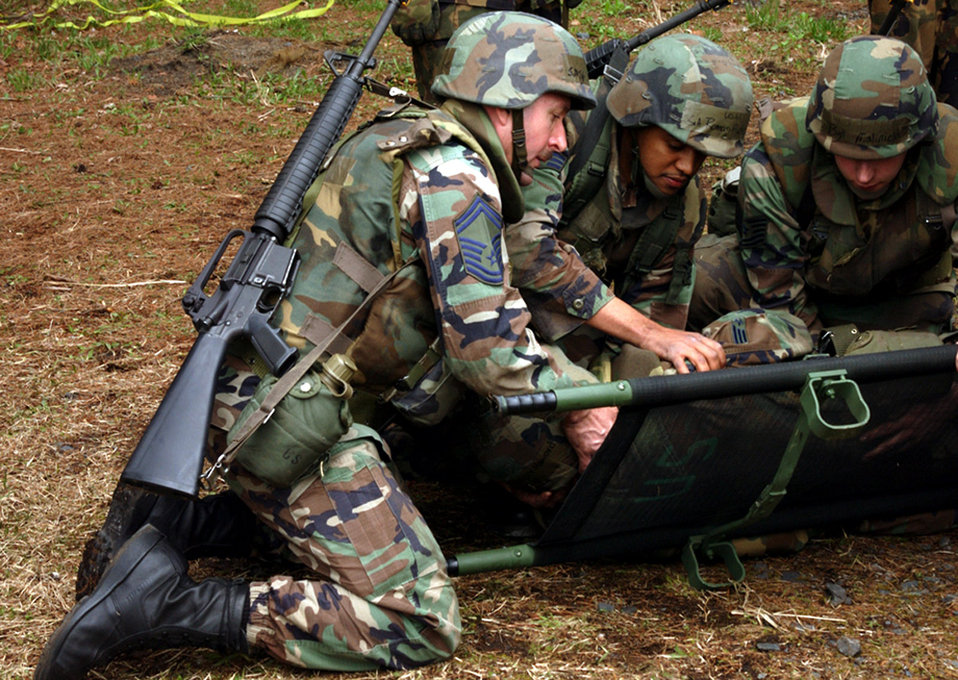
Basic combat skills course offers Airmen lifesaving training

Senior Master Sgt. Timothy Dye, a student in the Expeditionary Combat Skills Training course, practices rescuing a fellow Airman. The training, held April 23 to 25 at Camp Defender on Misawa Air Base, Japan, taught basic lifesaving skills as well as combat maneuvers. The ECST course is designed to prepare Airmen for deployment. Sergeant Dye is assigned to the 35th Maintenance Squadron munitions flight.